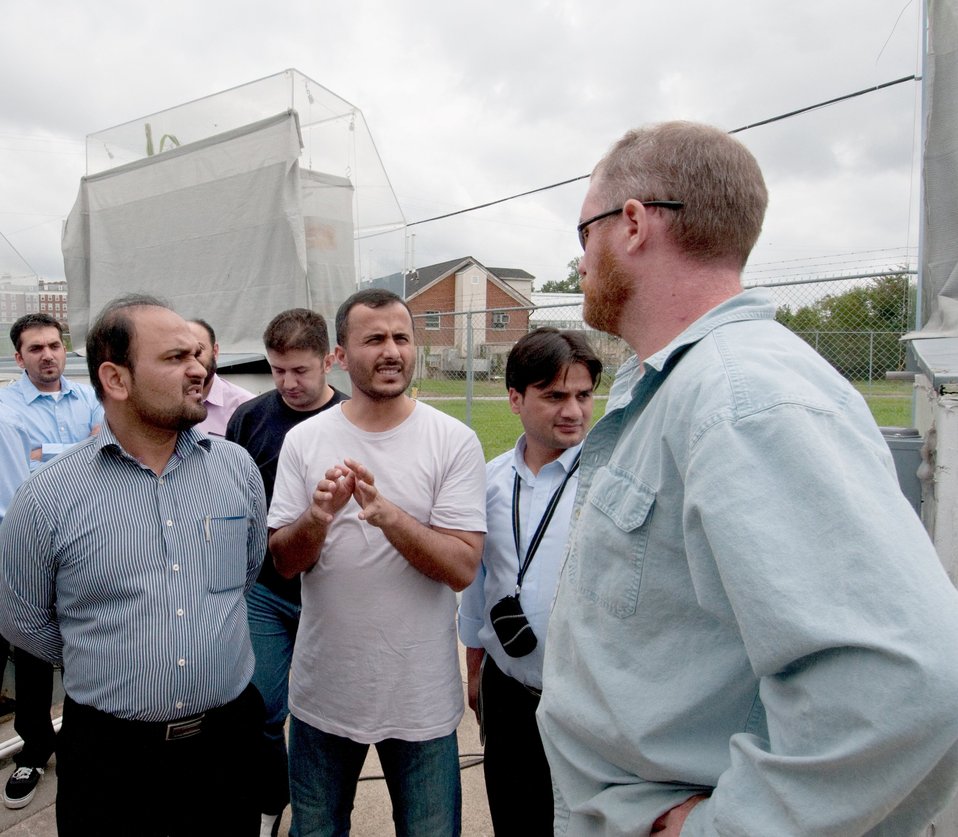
U.S. Department of Agriculture (USDA), Agriculture Research Service's Jackson Fisher (right), spoke with 12 Borlaug Fellows from Afghanistan’s Ministry of Agriculture, Irrigation and Livestock (MAIL) during their tour of the Global Climate Change Lab and the Soil Plant Atmosphere Research (SPAR) units in Beltsville, MD, on Wednesday, September 21, 2011. SPAR units provide precise control of the major environmental variables influencing crop growth including temperature, humidity, and atmospheric carbon dioxide concentration. The SPAR units are fully automated to measure crop canopy gas exchange including photosynthesis, respiration, transpiration and water use efficiency.